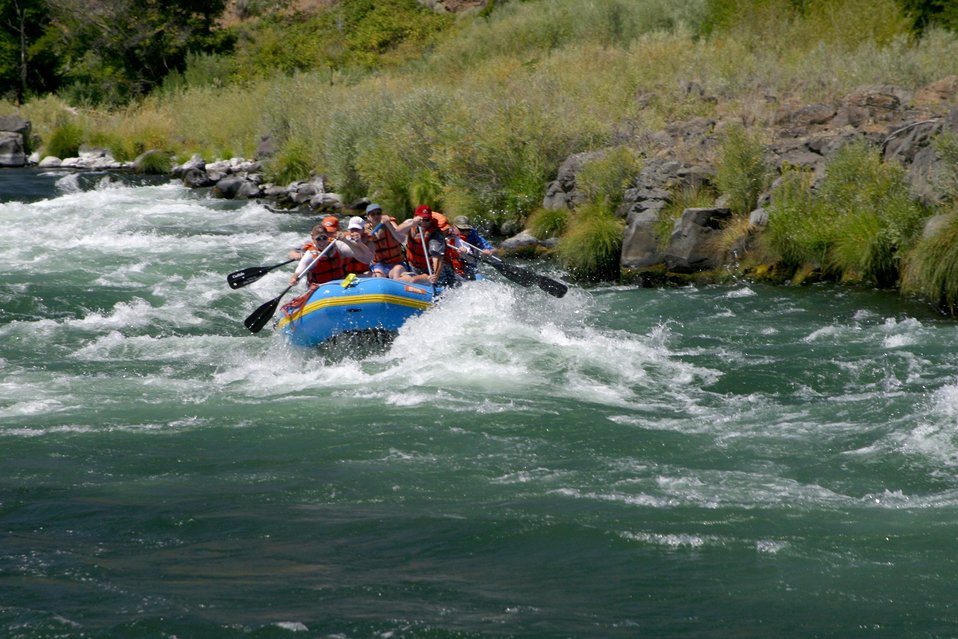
Wapinitia Rapids class III, has large roller coaster waves. 7/26/03 Pelton Dam 3600 cfs: Moody Rapids 4300 cfs.